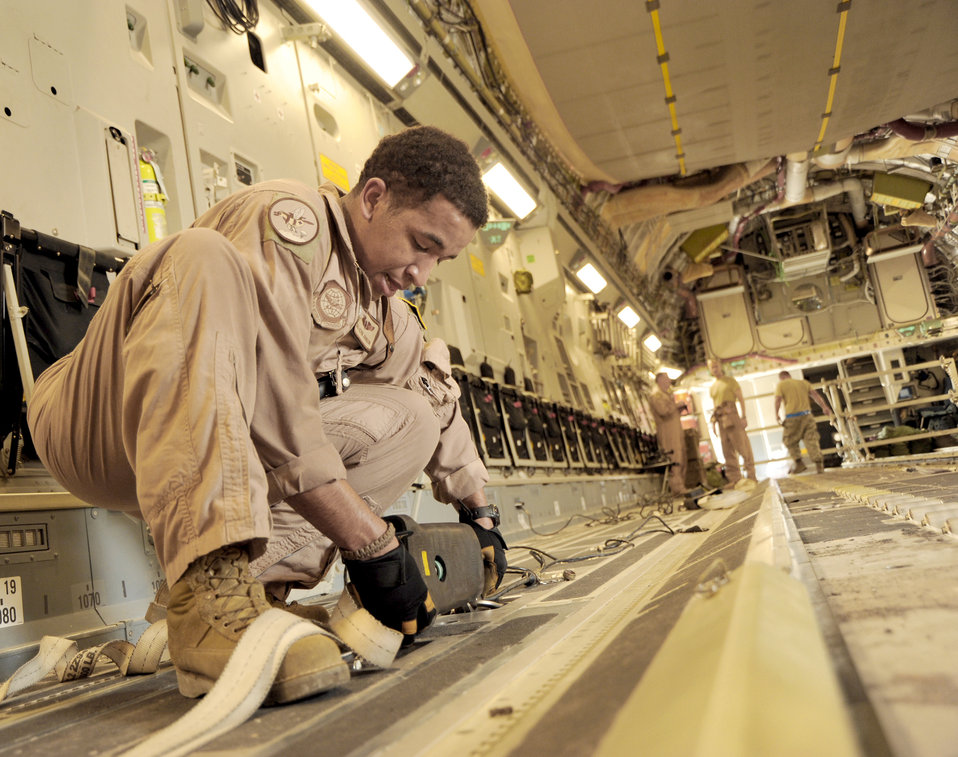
Operation Everest

Senior Airman Kevin Johnson prepares the cargo area of a C-17 Globemaster III before an airdrop mission Aug. 13, 2010, at an air base in Southwest Asia. Airman Johnson is a loadmaster with the 816th Expeditionary Airlift Squadron.